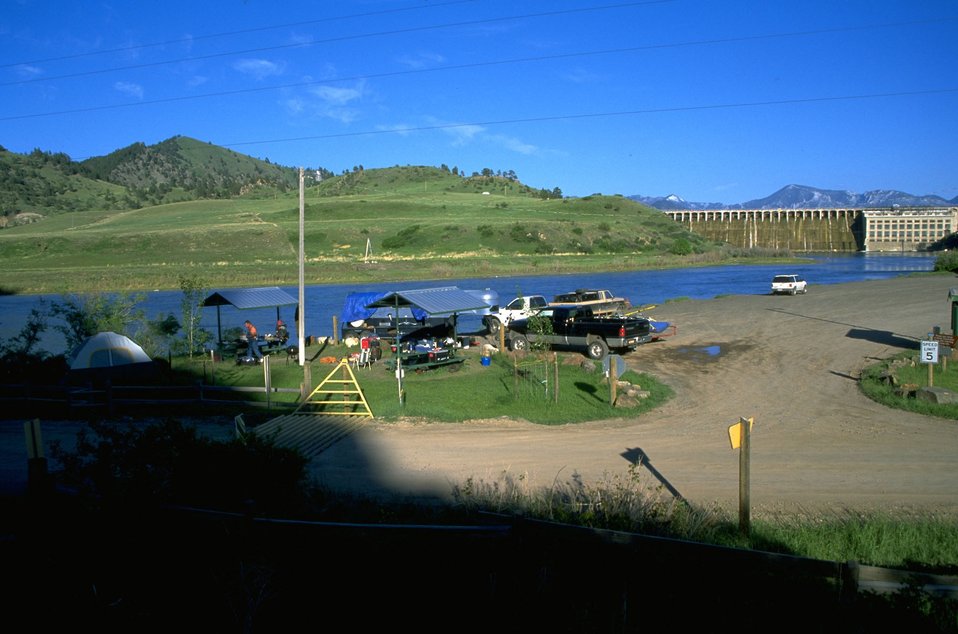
Campground along the Missouri River with Holter Dam in the background